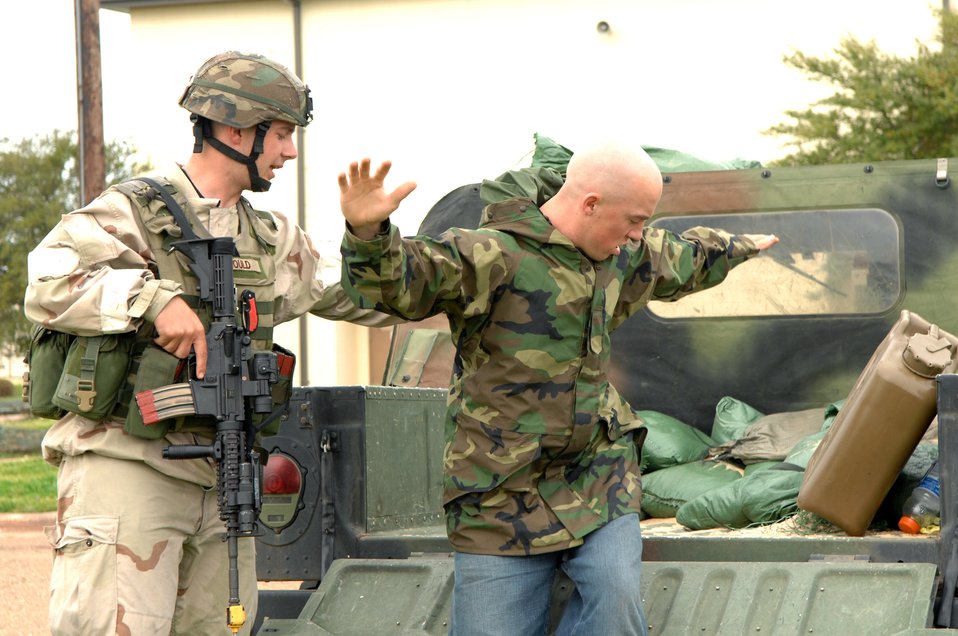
Global Cajun 07-2

Airman James Gould practices apprehension of an intruder at an entry control point during the Conventional Operational Readiness Exercise at Barksdale Air Force Base, La. Airman Gould is assigned to the 2nd Security Forces Squadron and is working in support of Global Cajun 07-2.